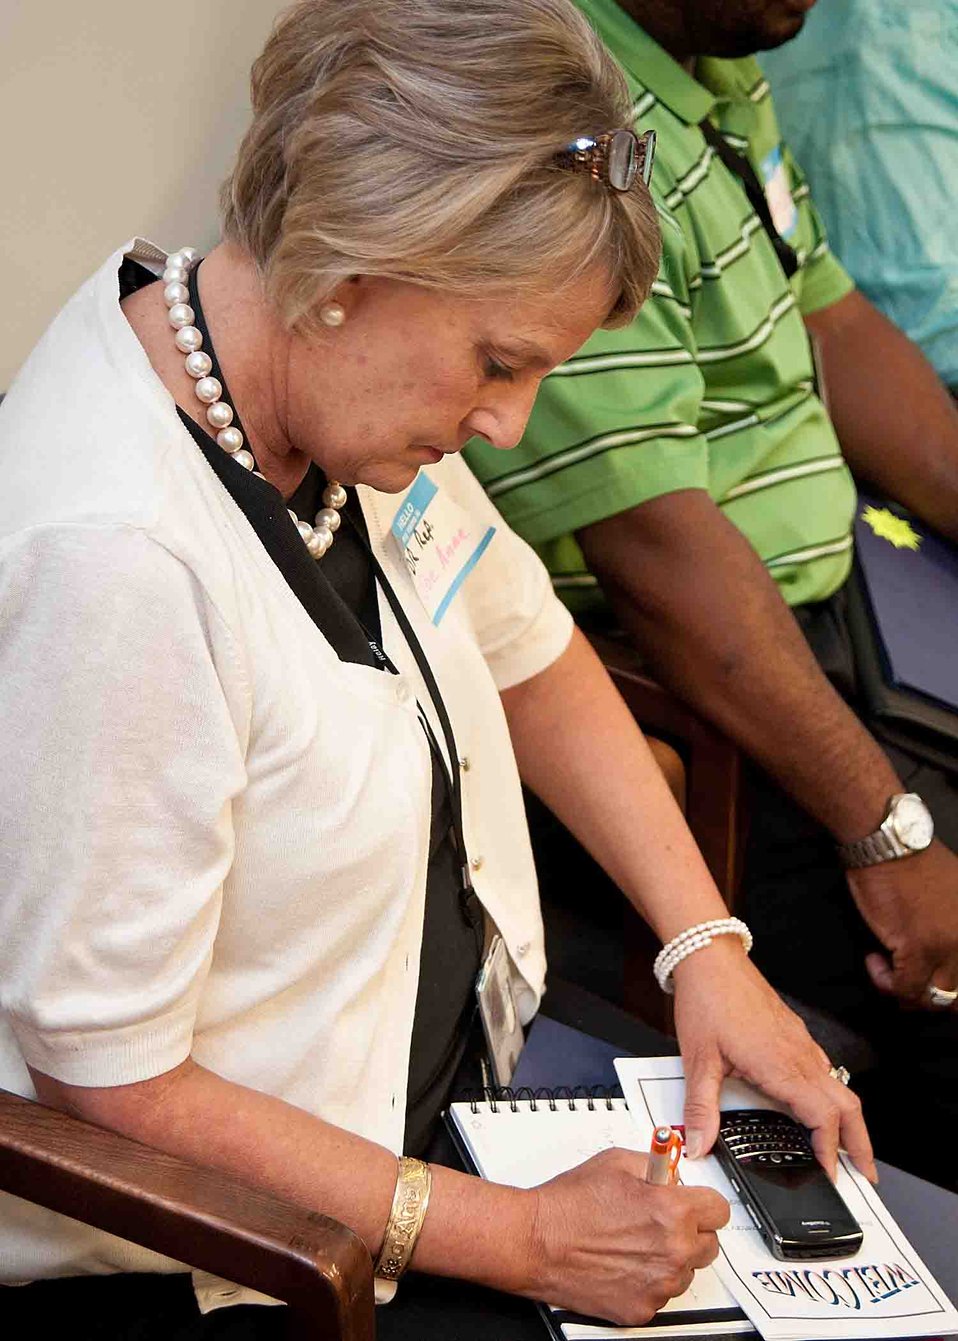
An Alternative Dispute Resolution (ADR) representative for the Food Safety Inspection Service Joe Anne Kennedy makes note of some of the high points of an Early Resolution and Conciliation Division open house and training workshop for employees and supervisors at the United States Department of Agriculture (USDA) in Washington, DC, Wednesday, Jun. 15, 2011. The primary goal of the workshop was to strengthen the ADR community through outreach, training and partnership with agencies in USDA and make employees aware of ADR.